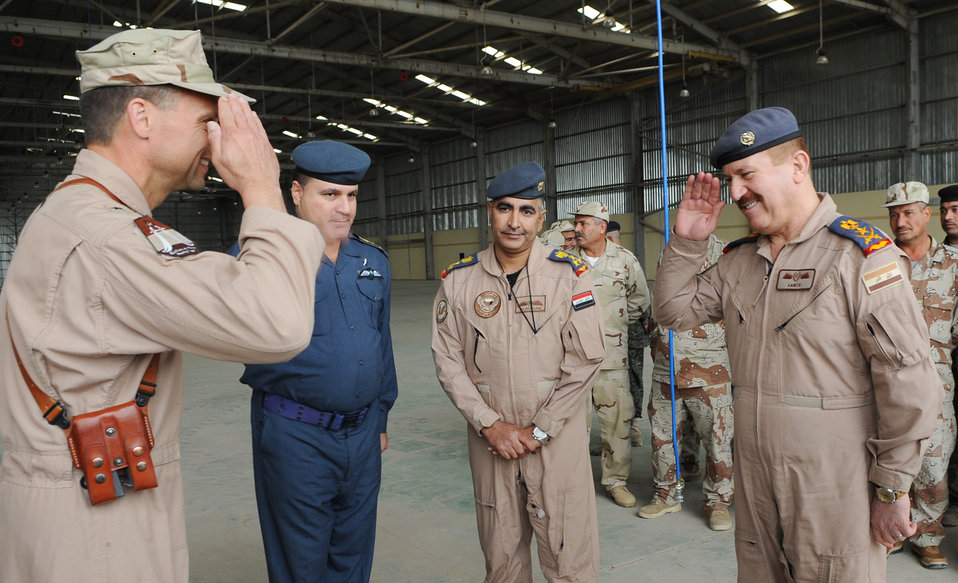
Hangar transfer

Brig. Gen. Scott Hanson, 321st Air Expeditionary Wing commander, and Staff Lt. Gen. Anwer Ameen, Iraqi air force commander, exchange salutes March 10, 2010, following the transfer of the newly restored Skeleton Hangar on Kirkuk Regional Air Base to the Iraqi air force. Members of the Iraq Training and Advisory Mission-U.S. Air Force and the Iraqi air force participated in the transfer ceremony.